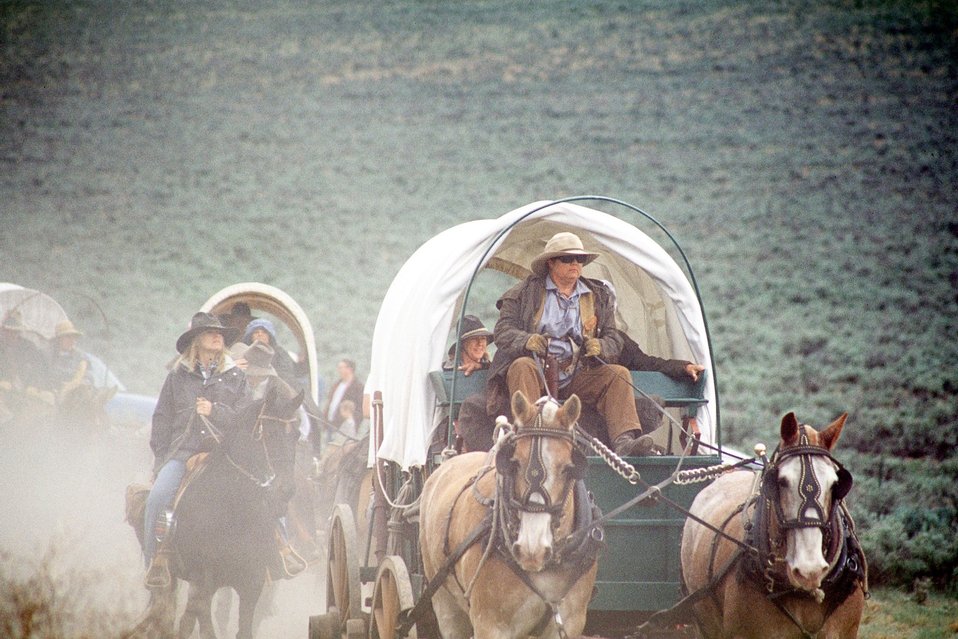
NHOTIC 10th Anniversary, wagon train reenactment. Pioneers and covered wagons on the Oregon Trail.